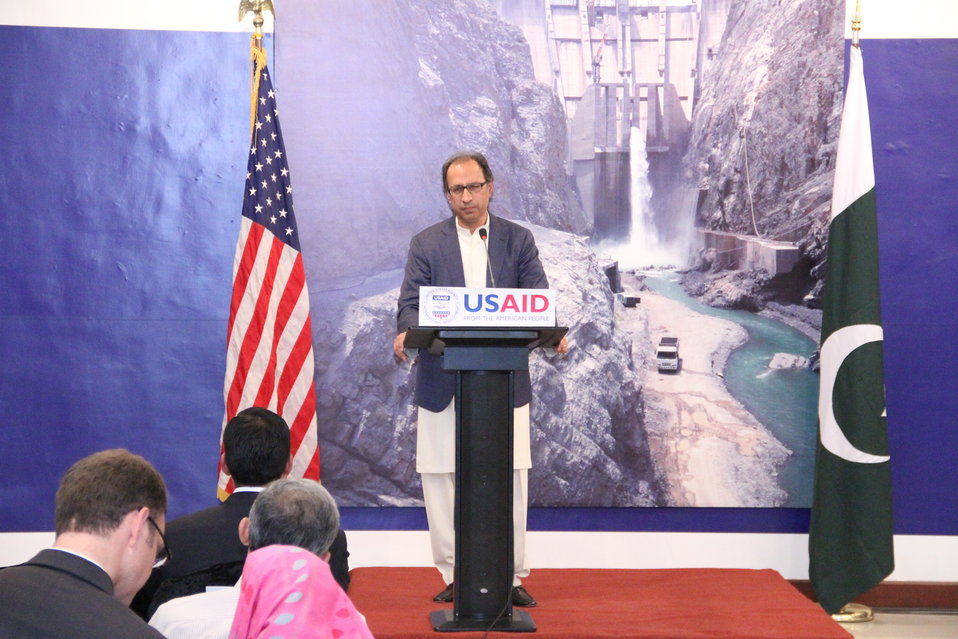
Photo Exhibition Celebrate US-PAK Cooperation at PNCA, Islamabad on April 13, 2012

Dr. Abdul Hafeez Sheikh, Federal Minister for Finance addressing the media